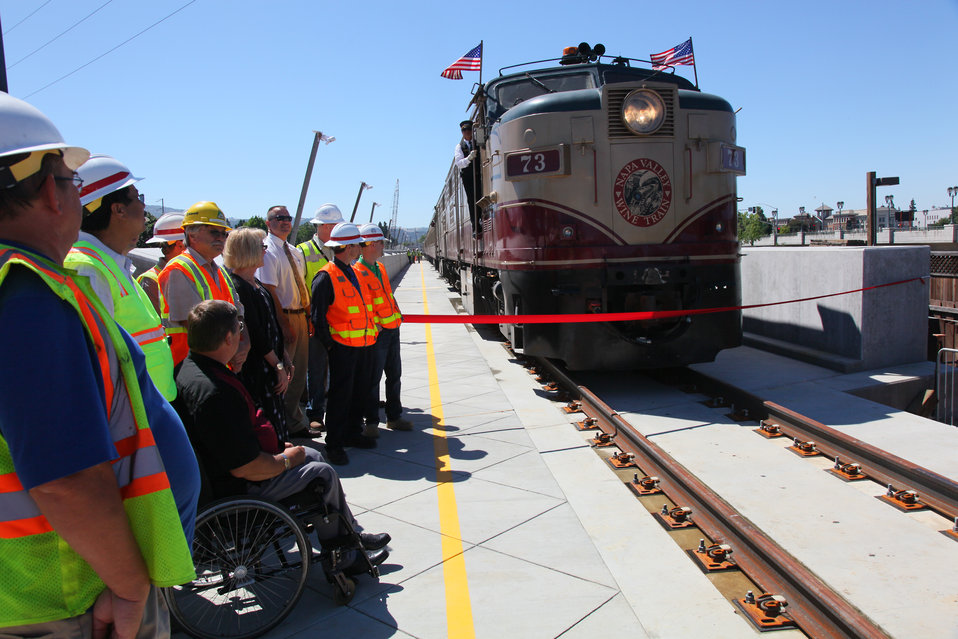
New railroad bridges open in Napa

The Napa Valley Wine Train crosses a new railroad bridge in Napa, Calif., for the first time June 22, 2011 as representatives from the U.S. Army Corps of Engineers, the city of Napa and the Napa Flood Control and Water Conservation District look on. The bridge project is part of the larger Napa River-Creek Flood Protection Project, a joint effort of the Corps, the city of Napa, and the Napa Flood Control and Water Conservation District to reduce flood risk for the city.